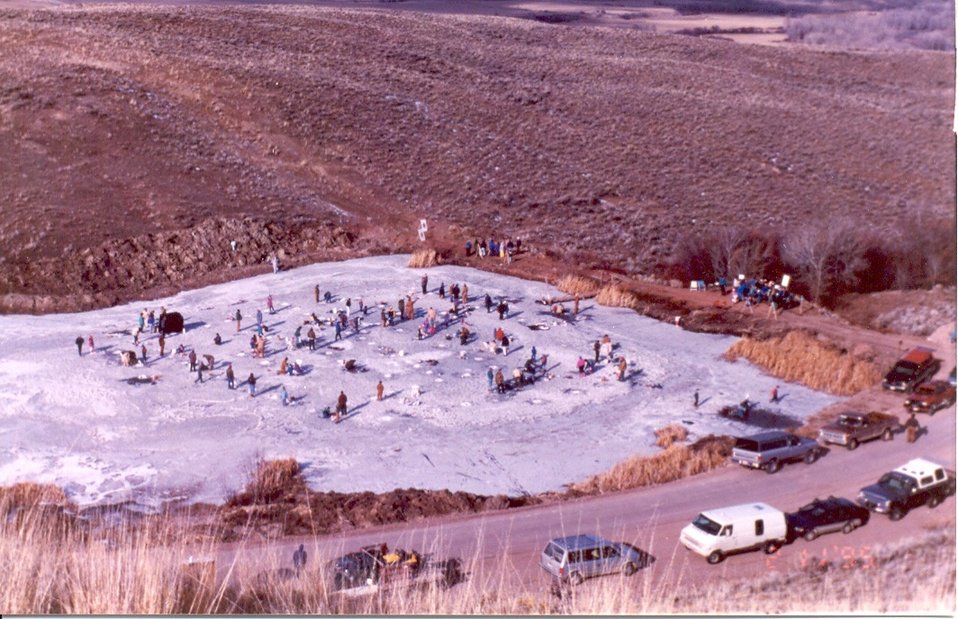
People Salmon Field Office UCSC Upper Columbia Salmon Clearwater District